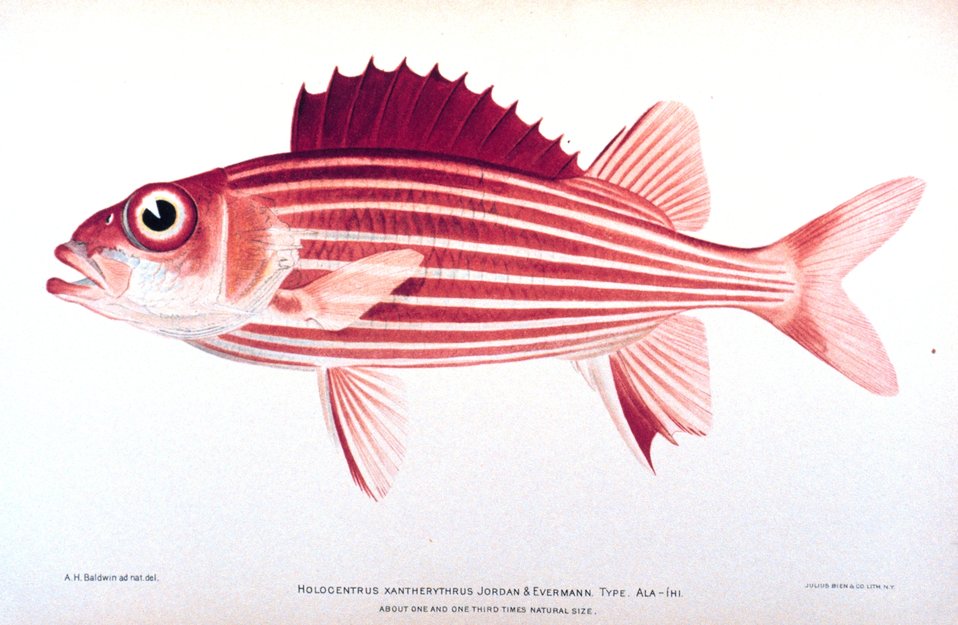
Holocentrus xantherythrus Jordan & Evermann. Type. Ala-ihi. In: 'The Shore Fishes of the Hawaiian Islands, with a General Account of the Fish Fauna', by David Starr Jordan and Barton Warren Evermann. Bulletin of the United States Fish Commission, Vol. XXIII, for 1903. Part I. P. 574, Plate IX.